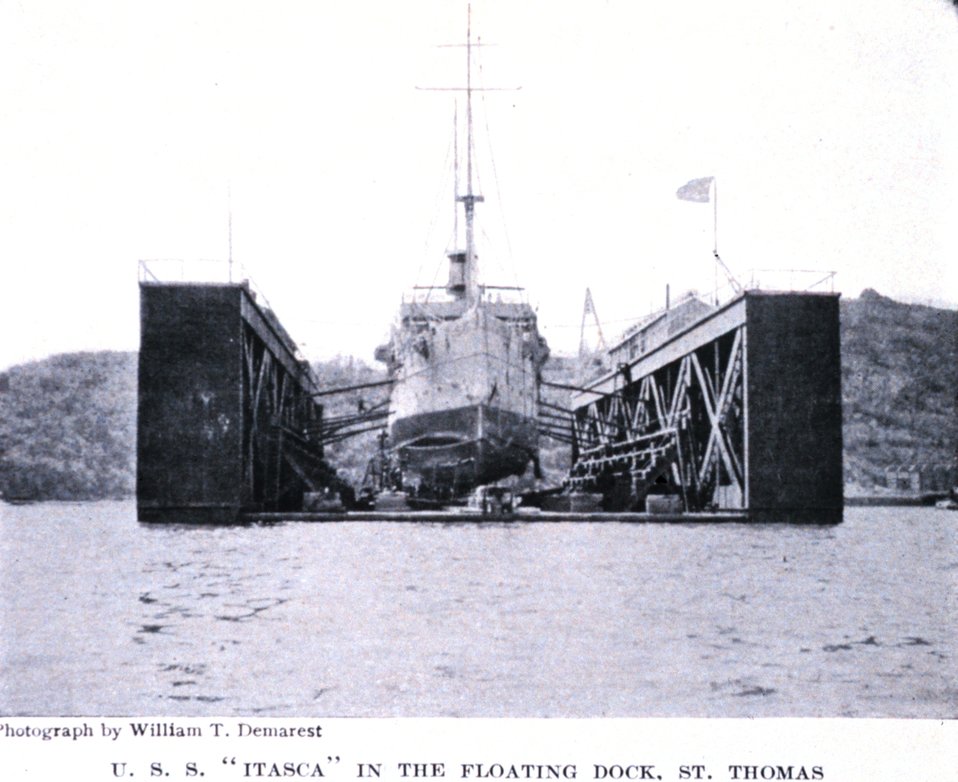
'U. S. S. Itasca in the Floating Dock, St. Thomas.' In: 'The Virgin Islands Our New Possessions and the British Islands', by Theodoor De Booy and John T. Faris, 1918. J. B. Lippincott and Company, Philadelphia. P. 267. Library Call Number C/hc100 V81 B.